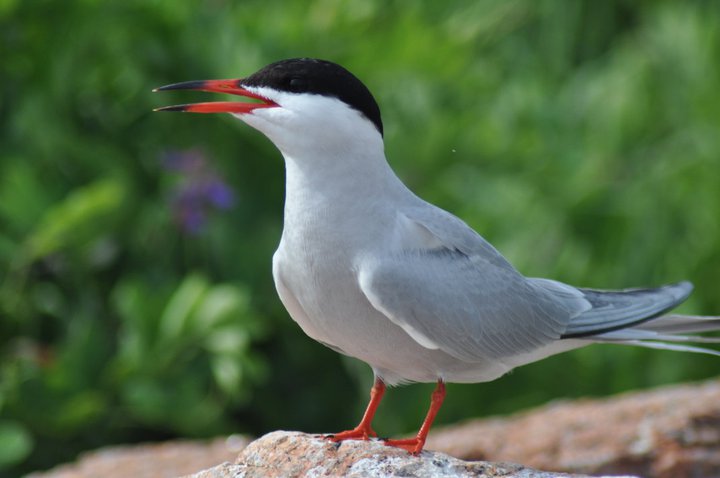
Common Tern

A common tern at the Nantucket National Wildlife Refuge, MA.